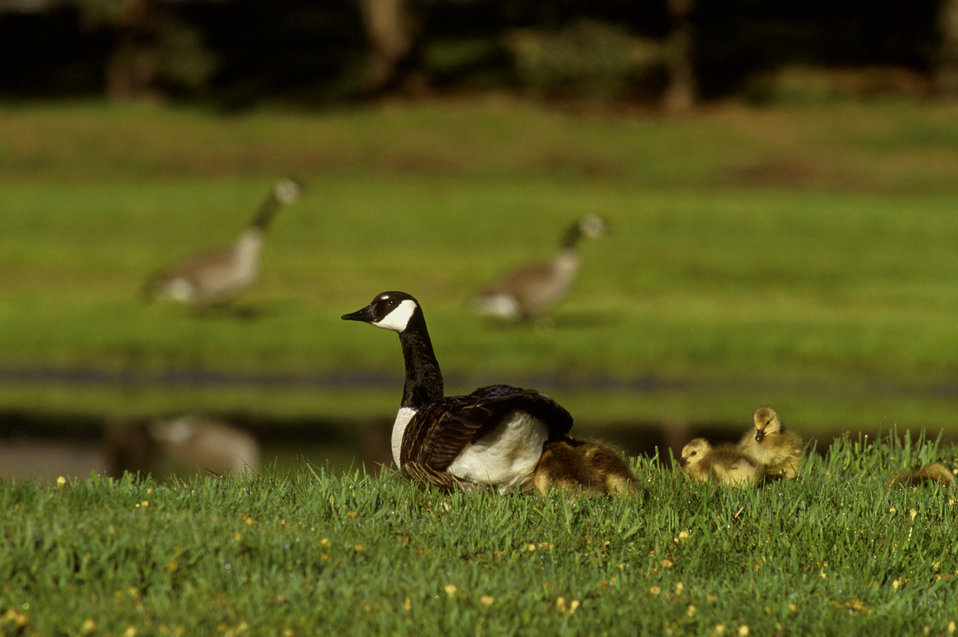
Canada Geese With Young

A view of a Canada Goose and her young at Canaan Valley located in West Virginia.